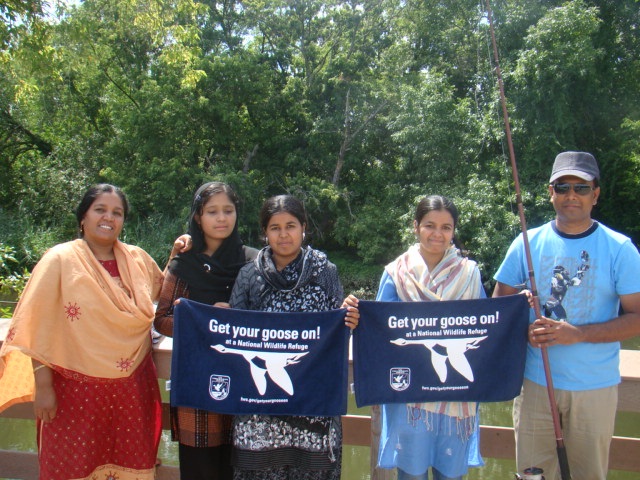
Get Your Goose On!

Fishing! GYGO! at John Heinz NWR.